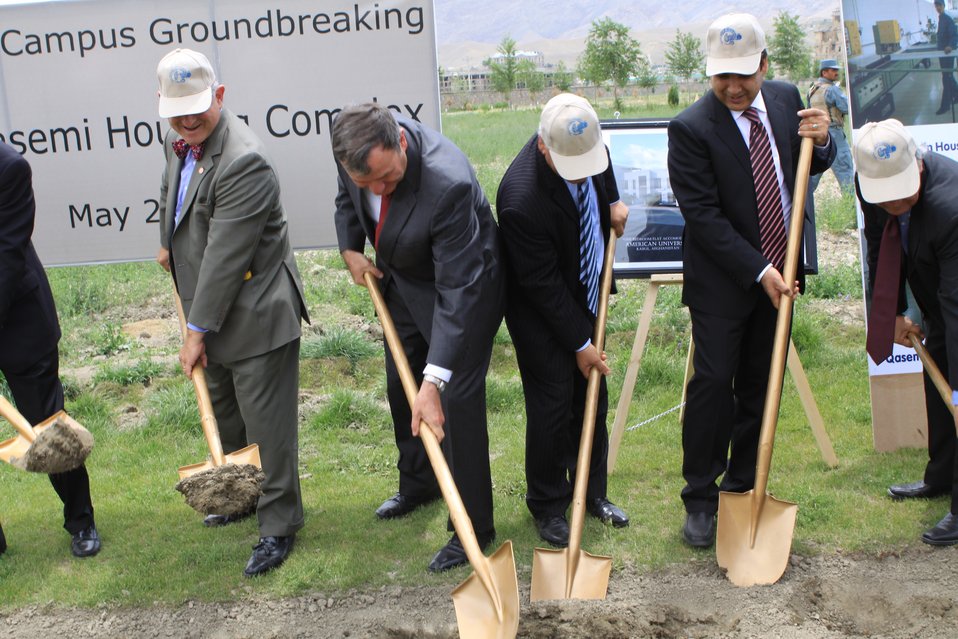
100526 AUAF Graduation 415